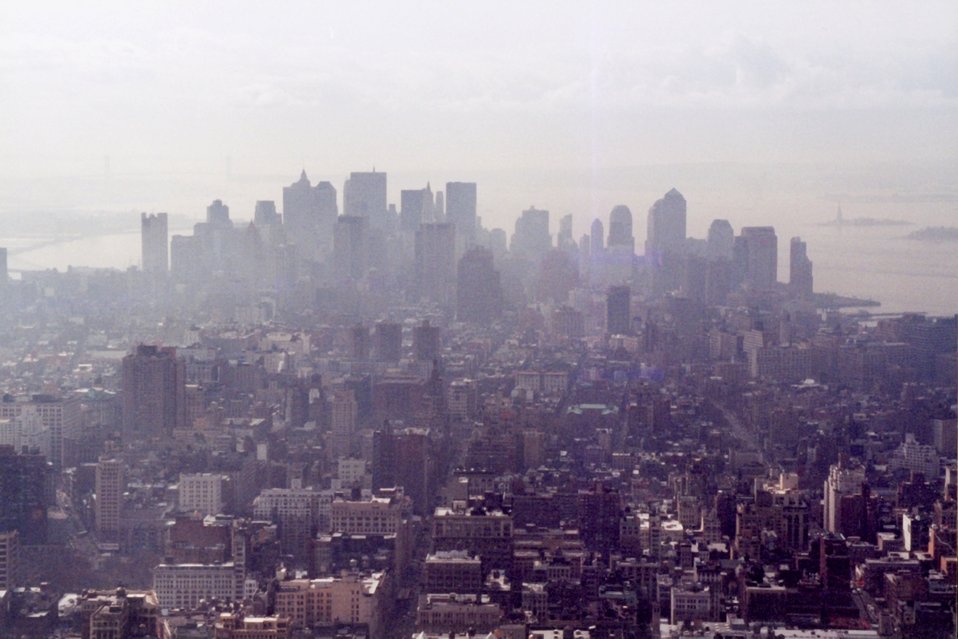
New York skyline from above.